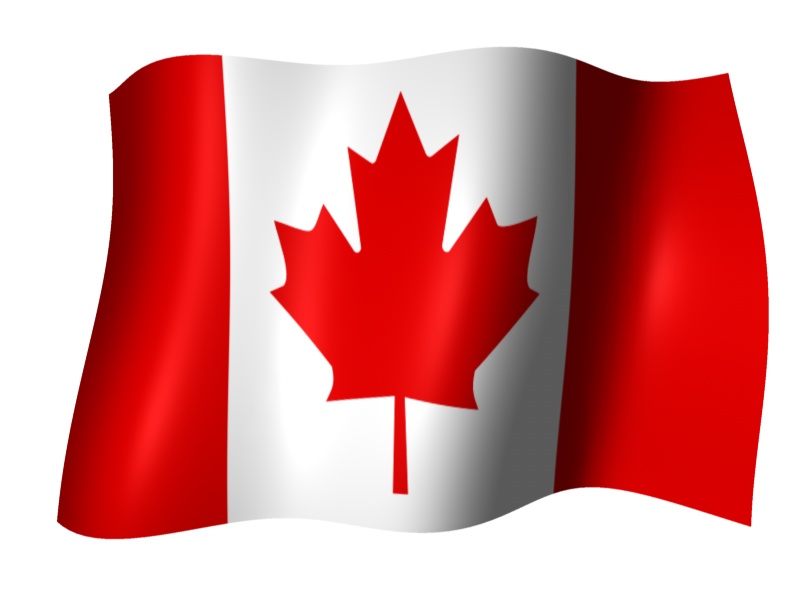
Kanadská vlajka vietor Zdroj: Private Dátum: 13.7.2005 Autor: Robo Blazek, Pezinok, Slovakia Povolenie: Use at will Iné verzie tohto súboru: nie